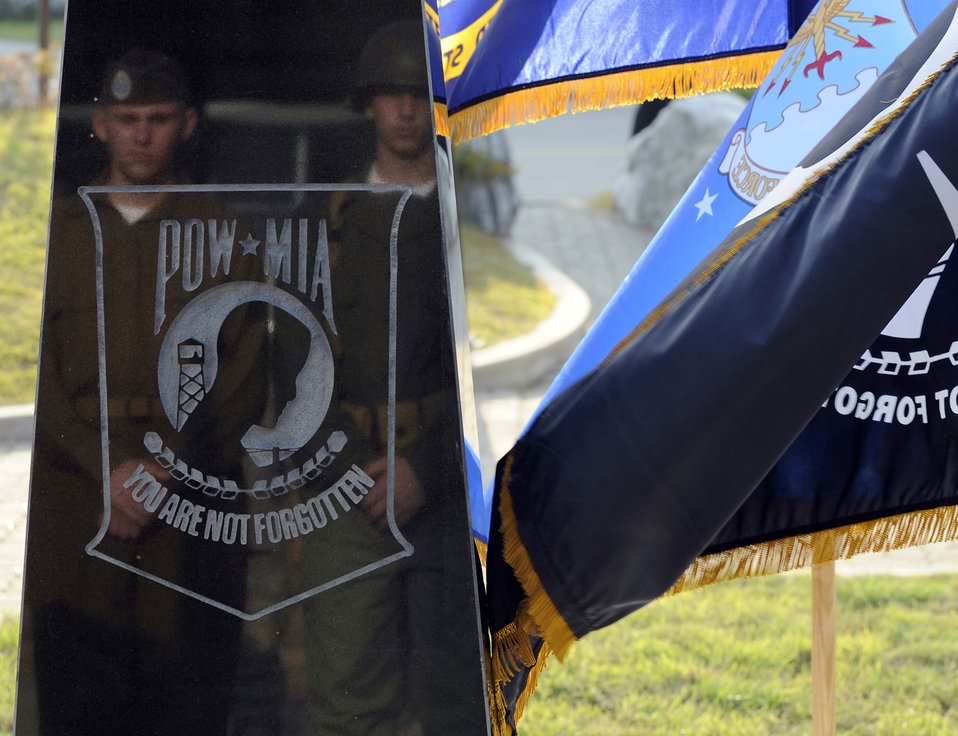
We remember

Airmen and Soldiers participate in the POW/MIA remembrance ceremony Sept. 18, 2009, at Osan Air Base, South Korea. Soldiers wearing historical military uniforms are seen in the reflection of the POW/MIA memorial.